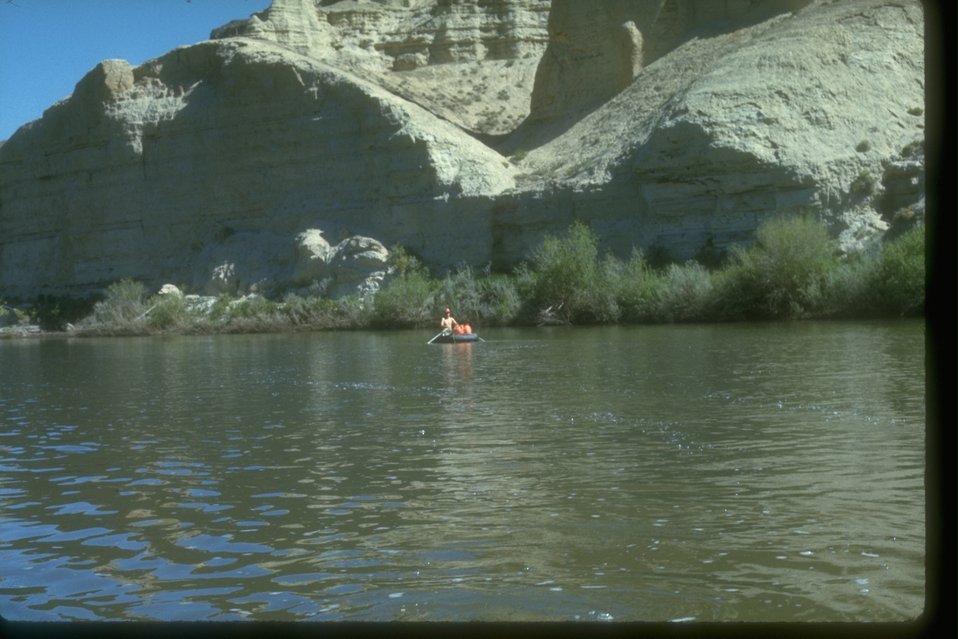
Rafters in the Owyhe Reservoir.